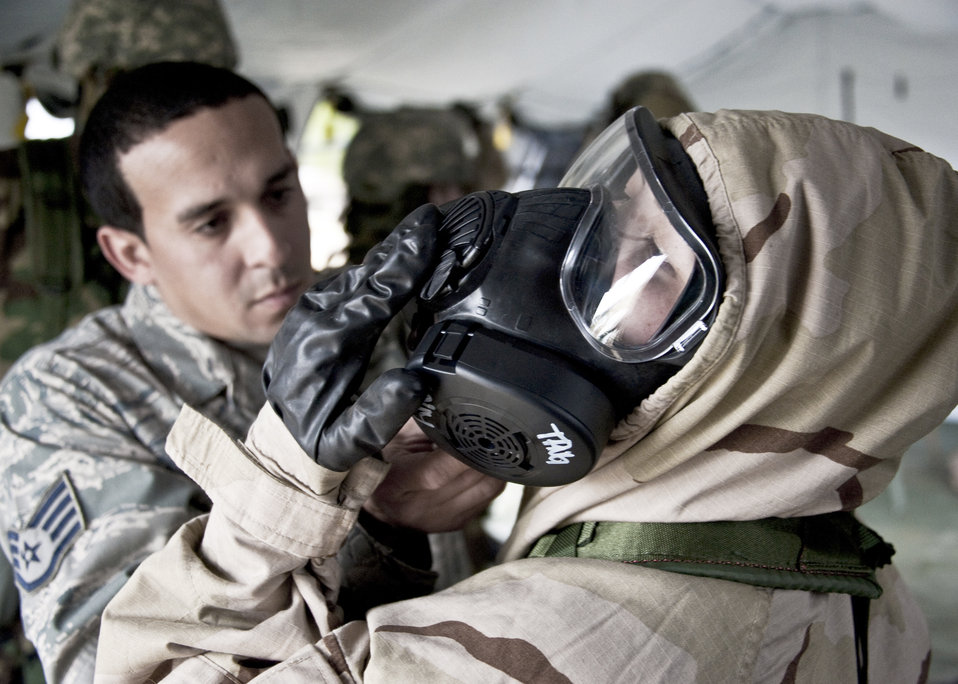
Operational readiness exercise

Staff Sgt. Peter Torres ensures an Airman's chemical suit is sealed and secured Feb. 24, 2011, during an operational readiness exercise at Eglin Air Force Base, Fla. Sergeant Torres is assigned to the 96th Civil Engineer Squadron.